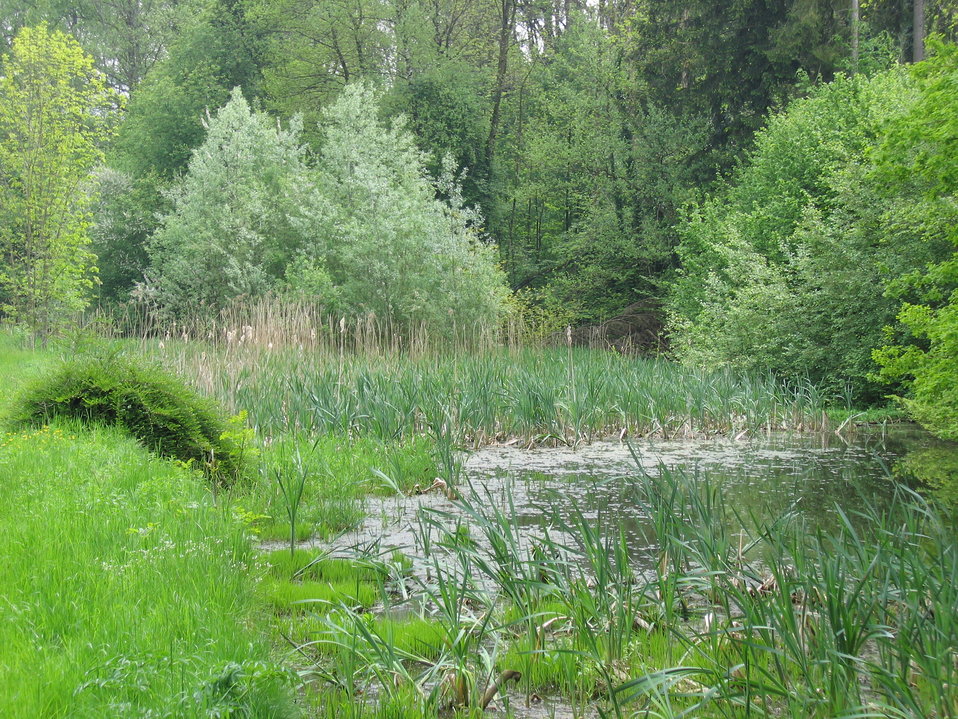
Deutsch: Deutschland - Baden-Württemberg - Bodenseekreis - Kressbronn am Bodensee: ehemaliger Mühlenteich der Untermühle